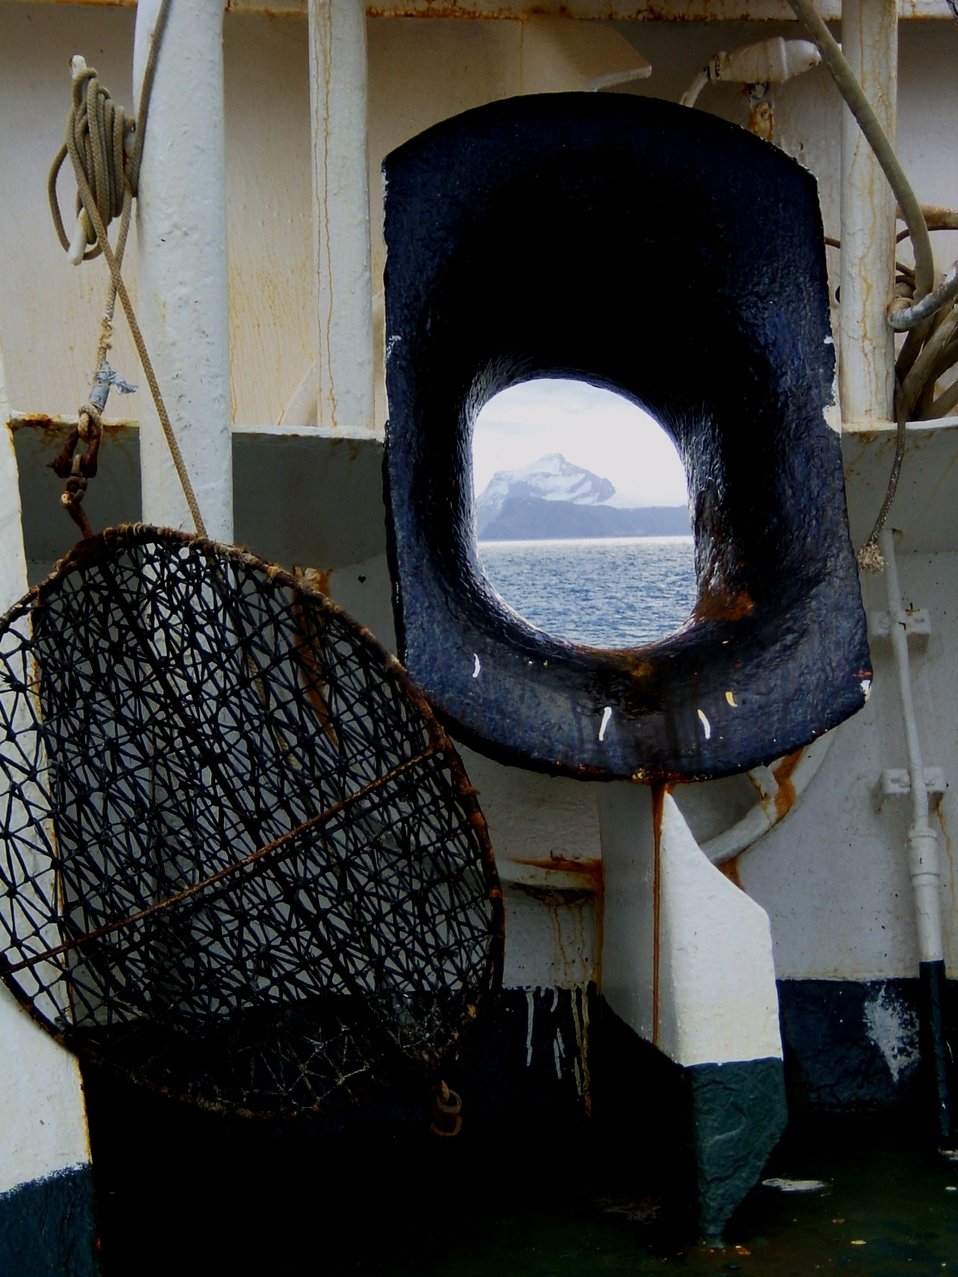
Nautically enhanced view of Antarctic coastline